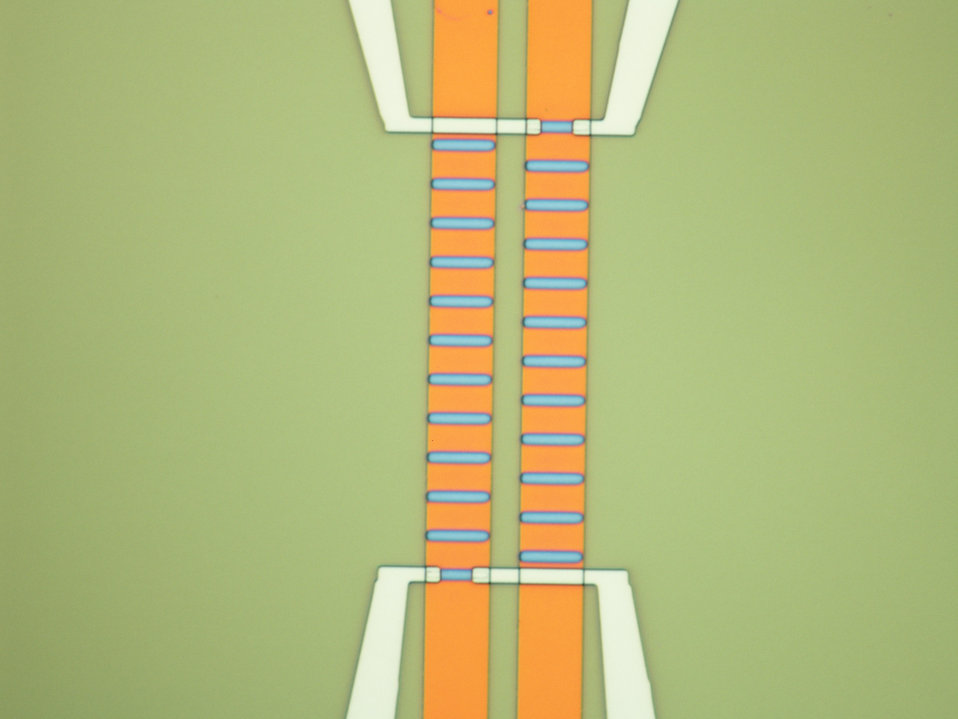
Micrograph of magnetic microfluidic chip developed by the National Institute of Standards and Technology and University of Colorado Boulder. Brief pulses of electrical current in the two orange lines generate a magnetic field to turn individual spin valves (blue bars) on and off, moving a magnetic bead up or down the ladder.